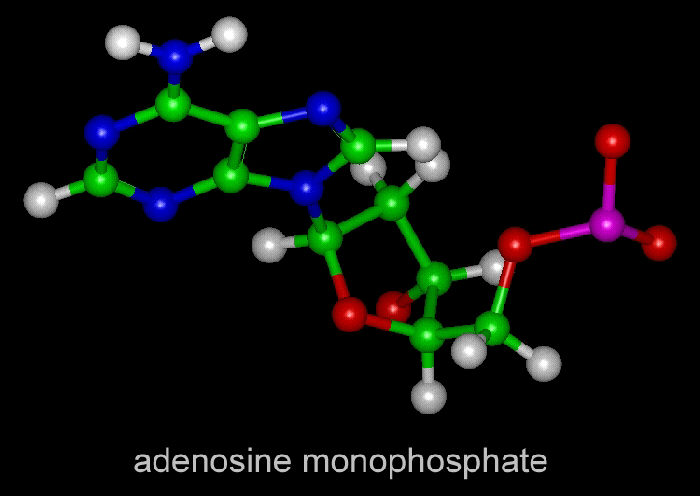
Molecular structure of adenosine monophosphate.